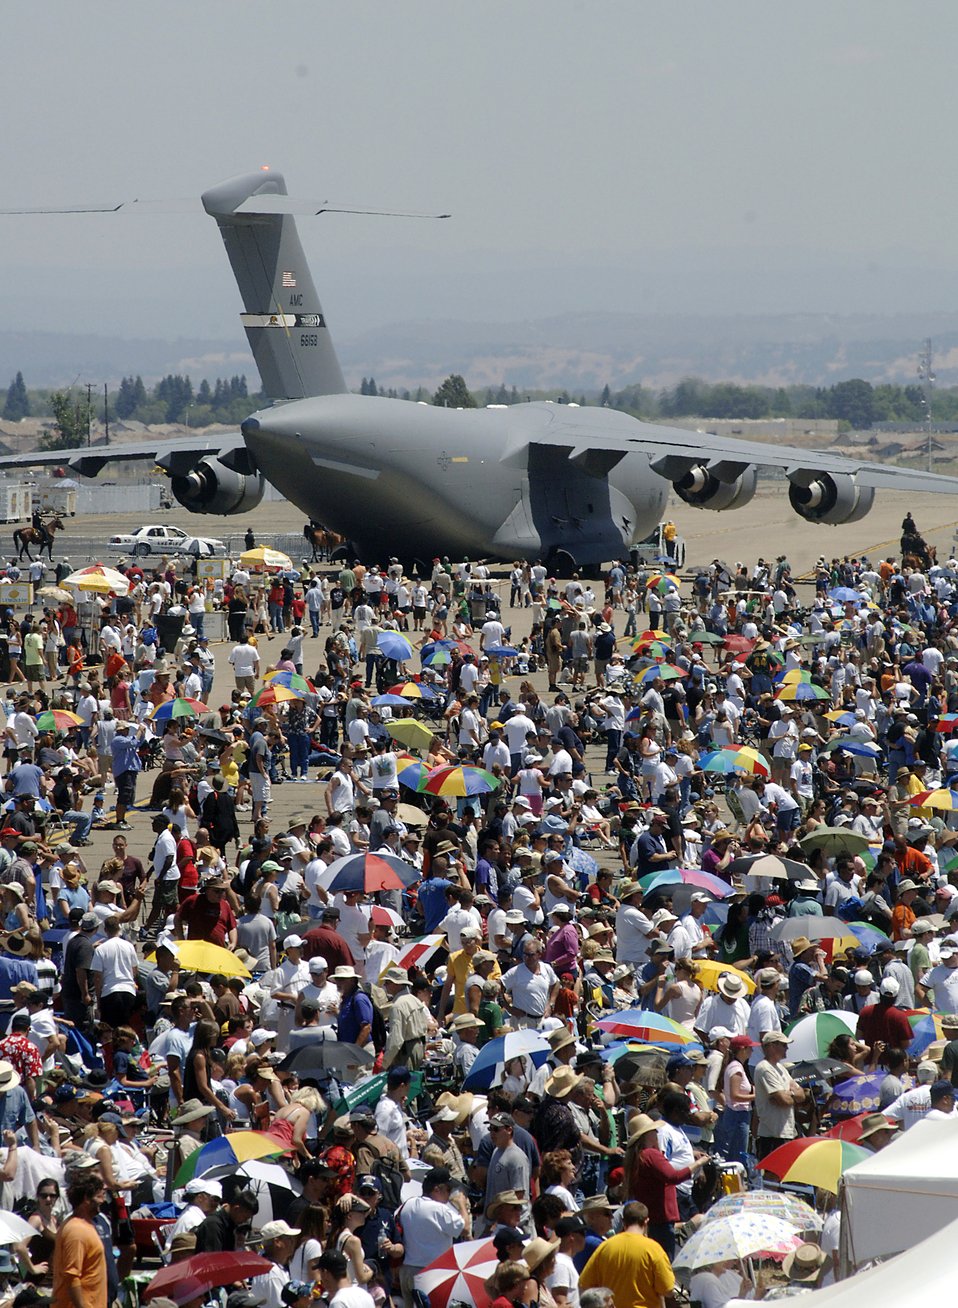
California Air Force Week

Spectators don't let the sun keep them from enjoying the many displays, including this C-5 Galaxy, June 9 at the California Capital Air Show in Sacramento, Calif. The air show was the last event of Air Force Week California. The purpose of Air Force Week is to inform and educate the American public about the importance and roles of the Air Force in America's national defense. More than 50,000 people attended the air show featuring the Air Force Thunderbirds and numerous Air Force aircraft.